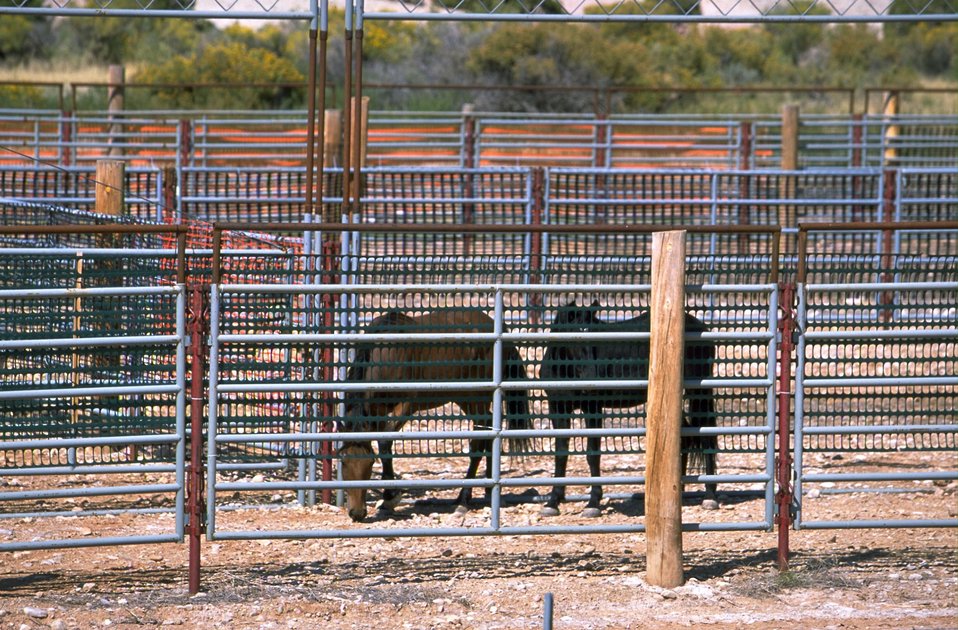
Two wild horses in a holding corral at Britton Spring in the Pryor Mountain National Wild Horse Range